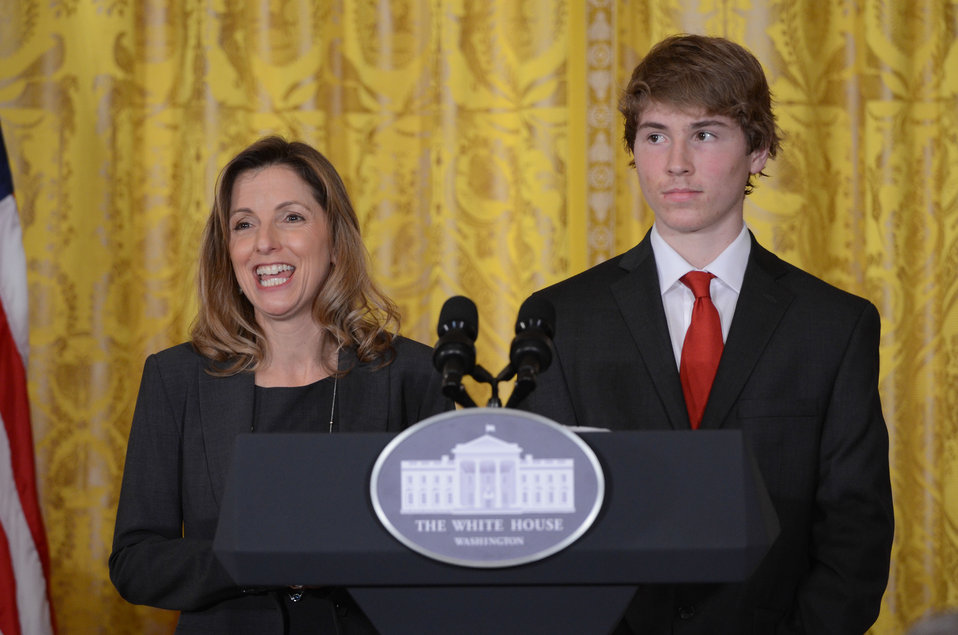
JoAnne Hammermaster speaks at the White House announcement on the proposed guidelines for comprehensive school wellness policies in the East Room of the White House in Washington, D.C. on Tuesday, Feb. 25, 2014. JoAnne Hammermaster is co-founder and president of Real Food For Kids, a group that strives to improve the quality of school food in Fairfax County Public Schools in Virginia. (Joanne Hammermaster’s son Sam stands beside her).